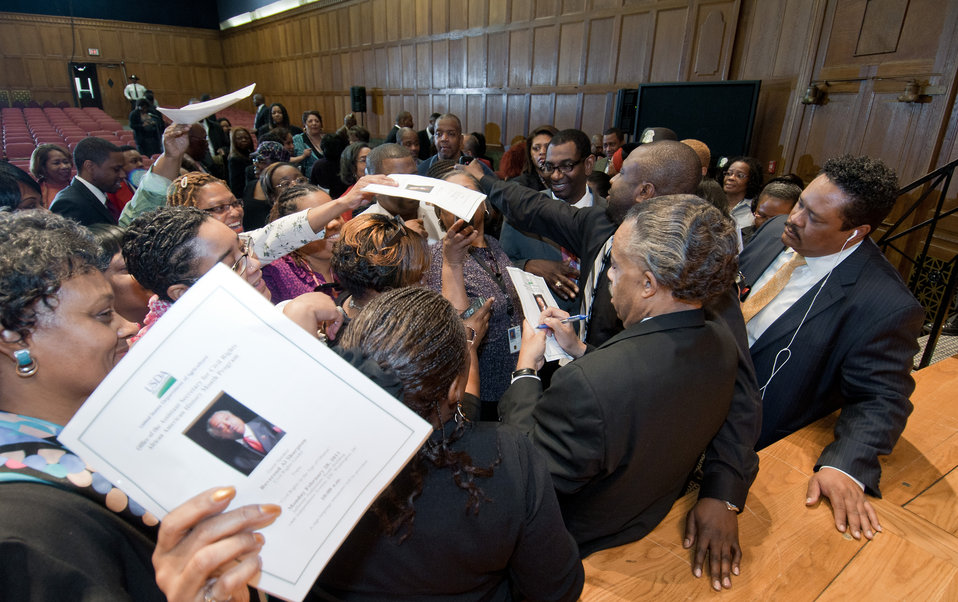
Following a keynote address by Reverend Al Sharpton, Jr. (signing an autograph), at the Department of Agriculture’s African American History Month Program, dozens of people from the audience were able to meet Rev. Sharpton, have photos taken with him and receive an autograph from him on Monday, February 28, 2011 in Washington, D.C. Rev. Sharpton’s topic was “Civil Rights in the Age of Obama.”